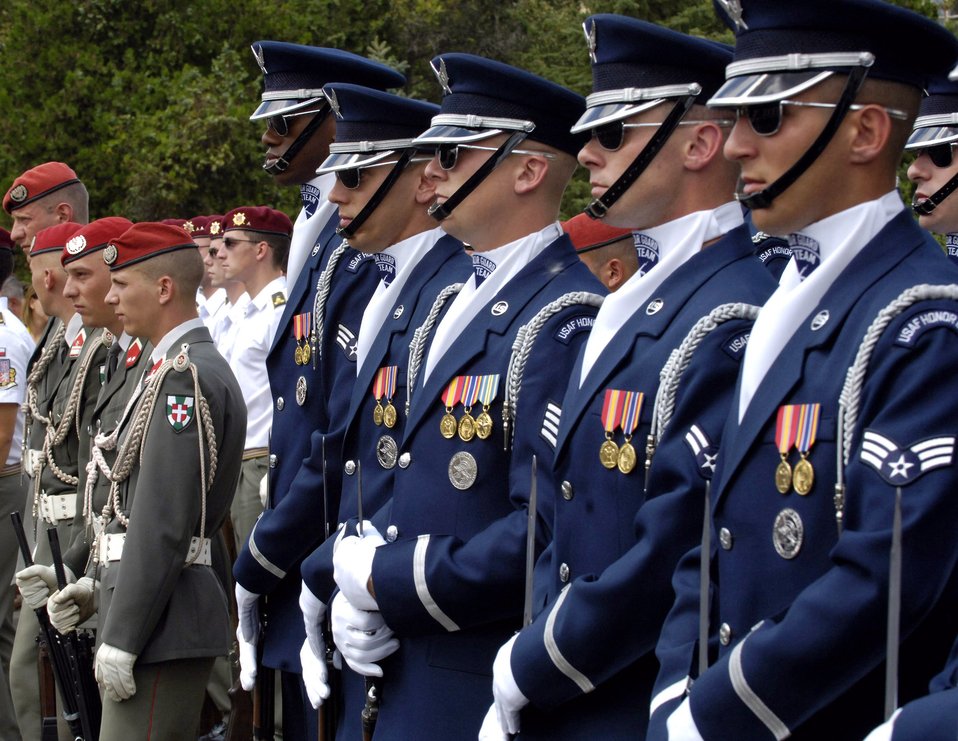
Drill fest

Airmen from the U.S. Air Force Honor Guard Drill Team stand next to armed forces from Austria and the Czech Republic. The team represented the U.S. armed forces at the Regimentfest in Miskolc City, Hungary, July 28.